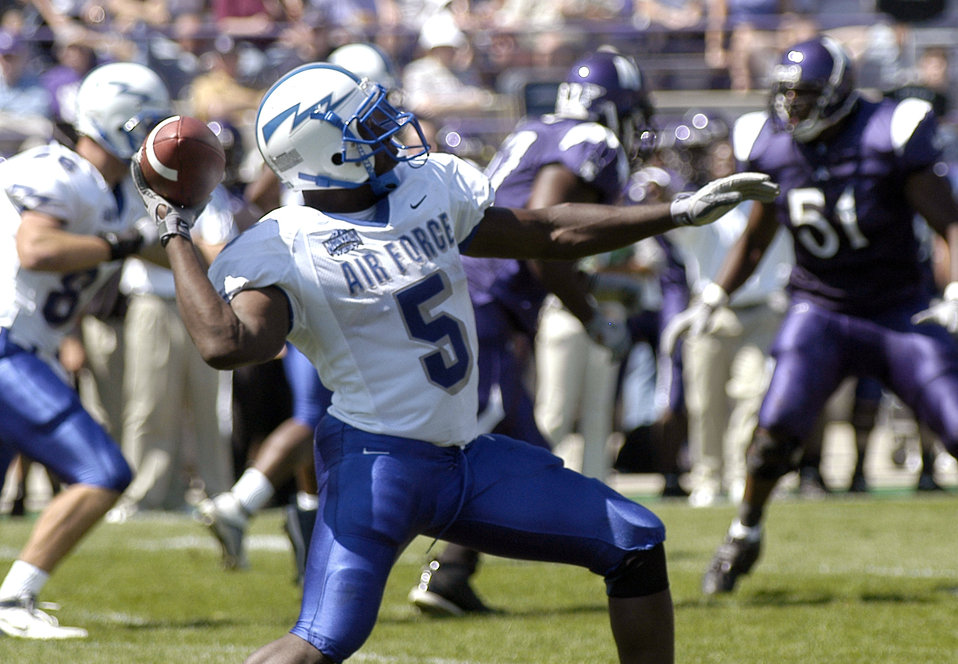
Surprise

EVANSTON, Ill. -- Air Force Academy Falcon running back Anthony Butler throws a surprise halfback pass to wide receiver J.P. Waller. Butler completed the pass for 37 yards and also rushed for 107 yards and two touchdowns to lead the Falcons offense against the Northwestern Wildcats. The academy beat Northwestern, 22-21.